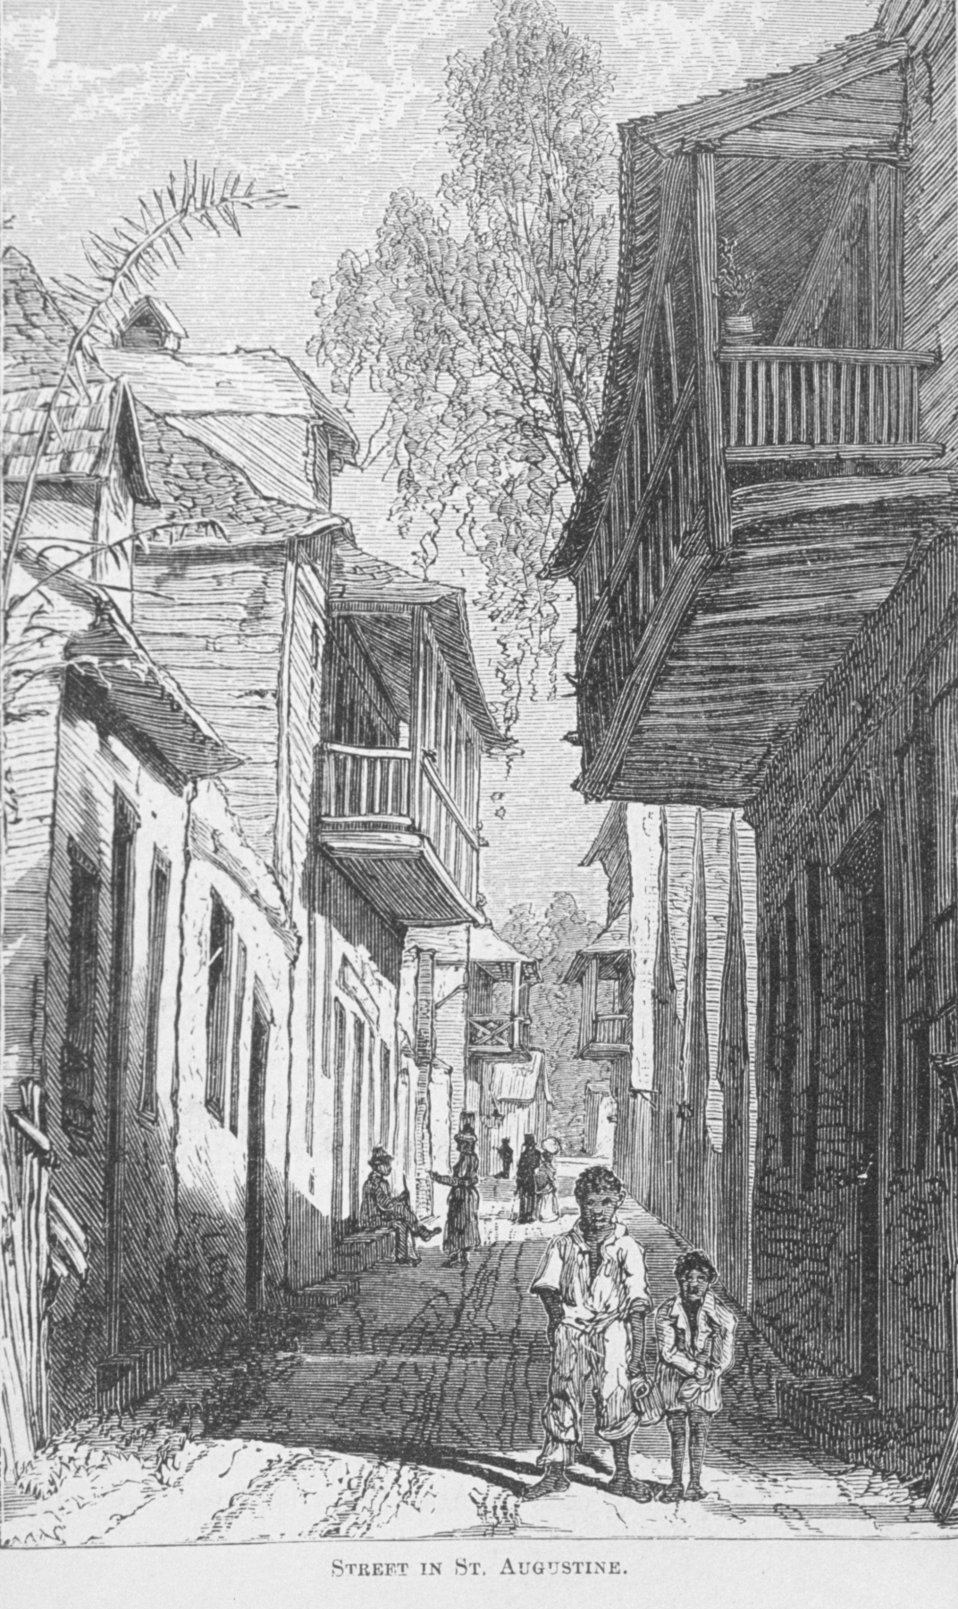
Street in St. Augustine - in 'Florida for Tourists, Invalids, and Settlers' by George M. Barbour, 1881. Library Call No. F316 .B23 1881.